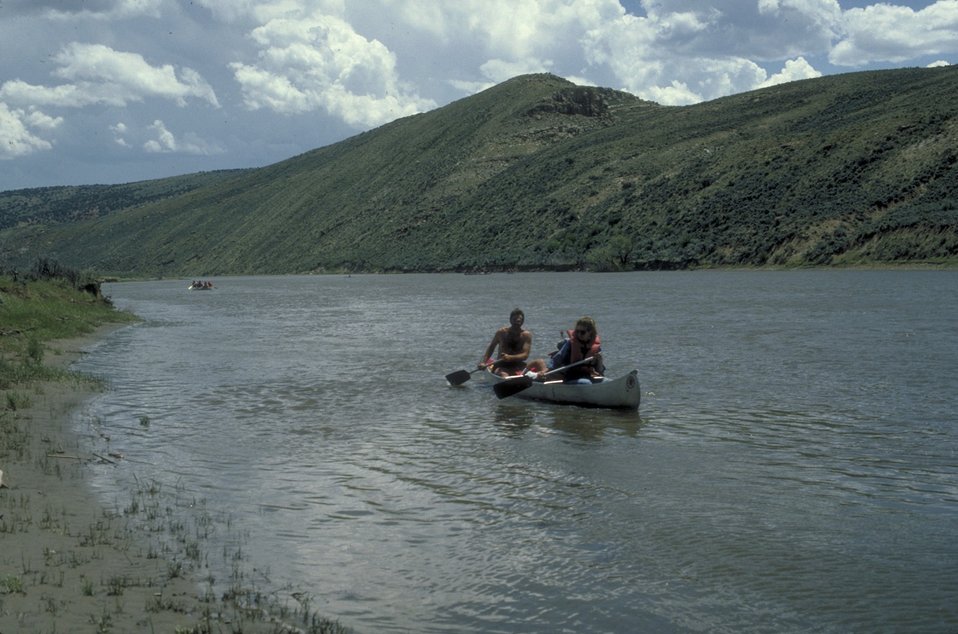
Canoeing down the Yampa River.